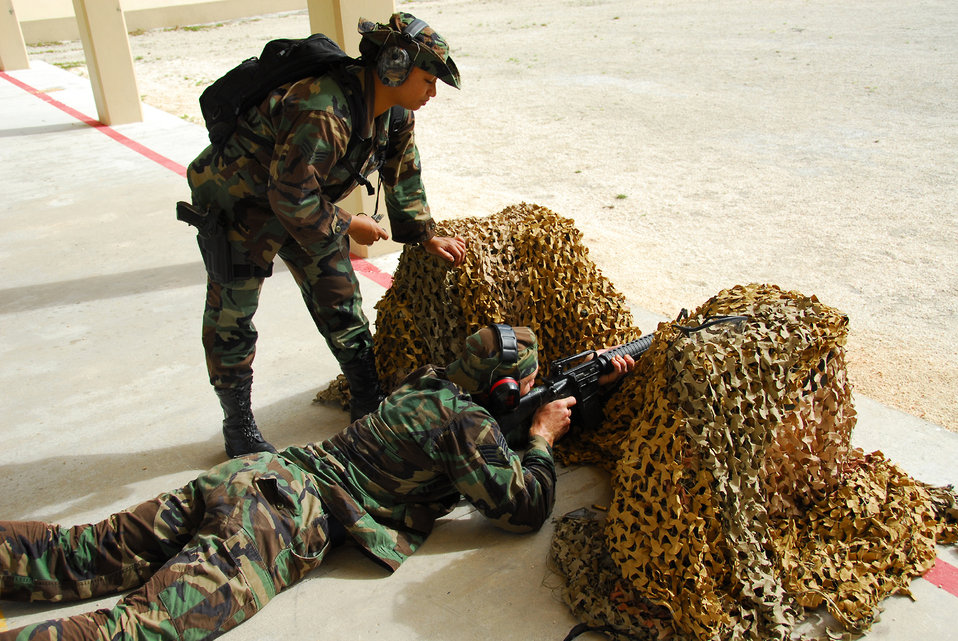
Competition challenges Airmen's warfighting abilities

Staff Sgt. Brent Watkins fills in a defensive lining position to engage in live fire and take out the enemy at Checkpoint 5 during Warrior Day Jan. 26 at Andersen Air Force Base, Guam. Sergeant Watkins is assigned to the 36th Civil Engineer Squadron. The competition simulated challenges Airmen may face in combat.